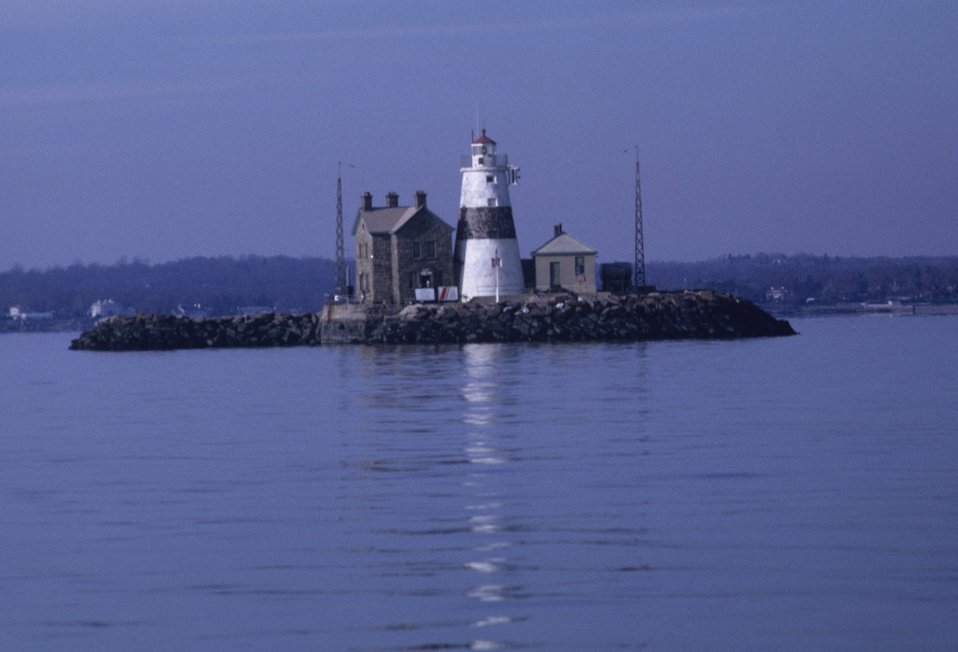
Execution Rocks Lighthouse in Long Island Sound. The smaller building and antennas have been removed in recent years.